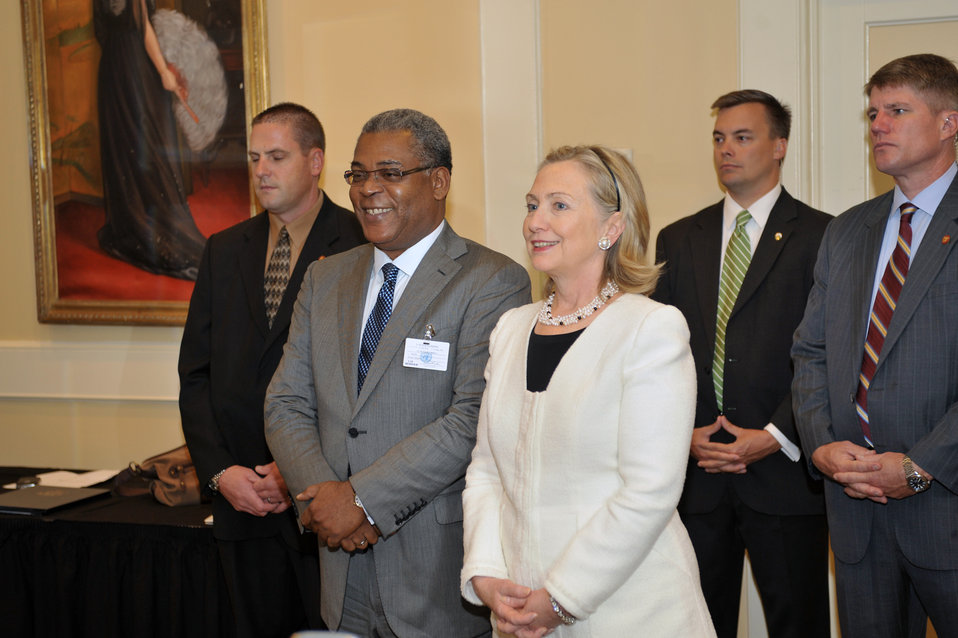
Secretary Clinton and Haitian President Bellerive Pose for a Photo

U.S. Secretary of State Hillary Rodham Clinton and Haitian Prime Minister Jean-Max Bellerive pose for a photo before signing two memoranda of understanding regarding Haiti recovery projects at the InterContinental hotel in New York, New York, on September 20, 2010.